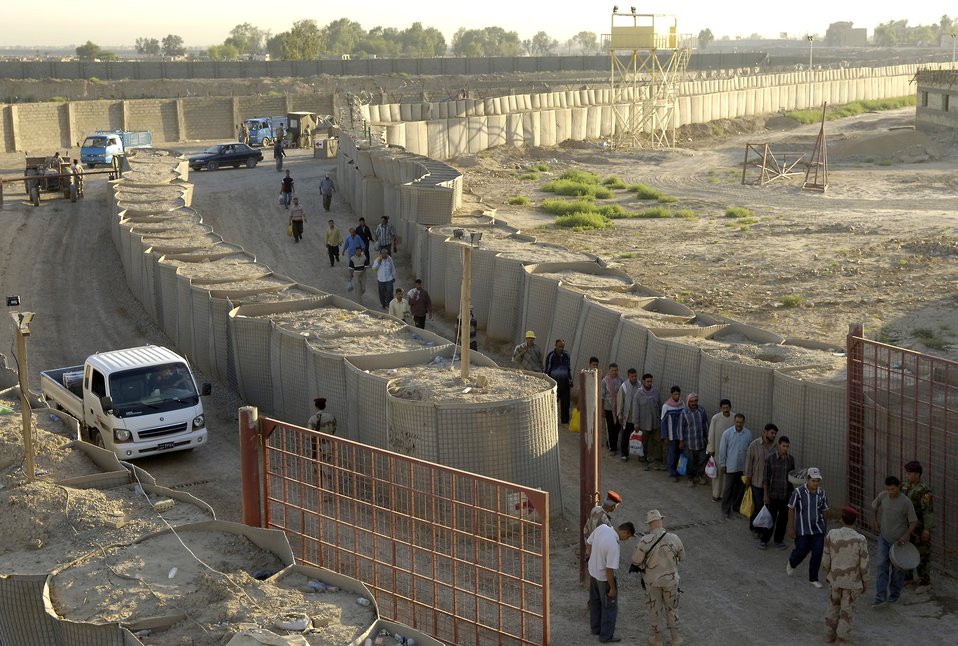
Airmen train Iraqi soldiers on base defense

Workers line up to enter Ar Rasheed Base, Iraq, on Friday, May 26, 2006. Hundreds of workers enter the base daily. The soldiers search every person and vehicle that enters. Each soldier is trained and advised by five security forces Airmen and their Army commander who live and work on the base.